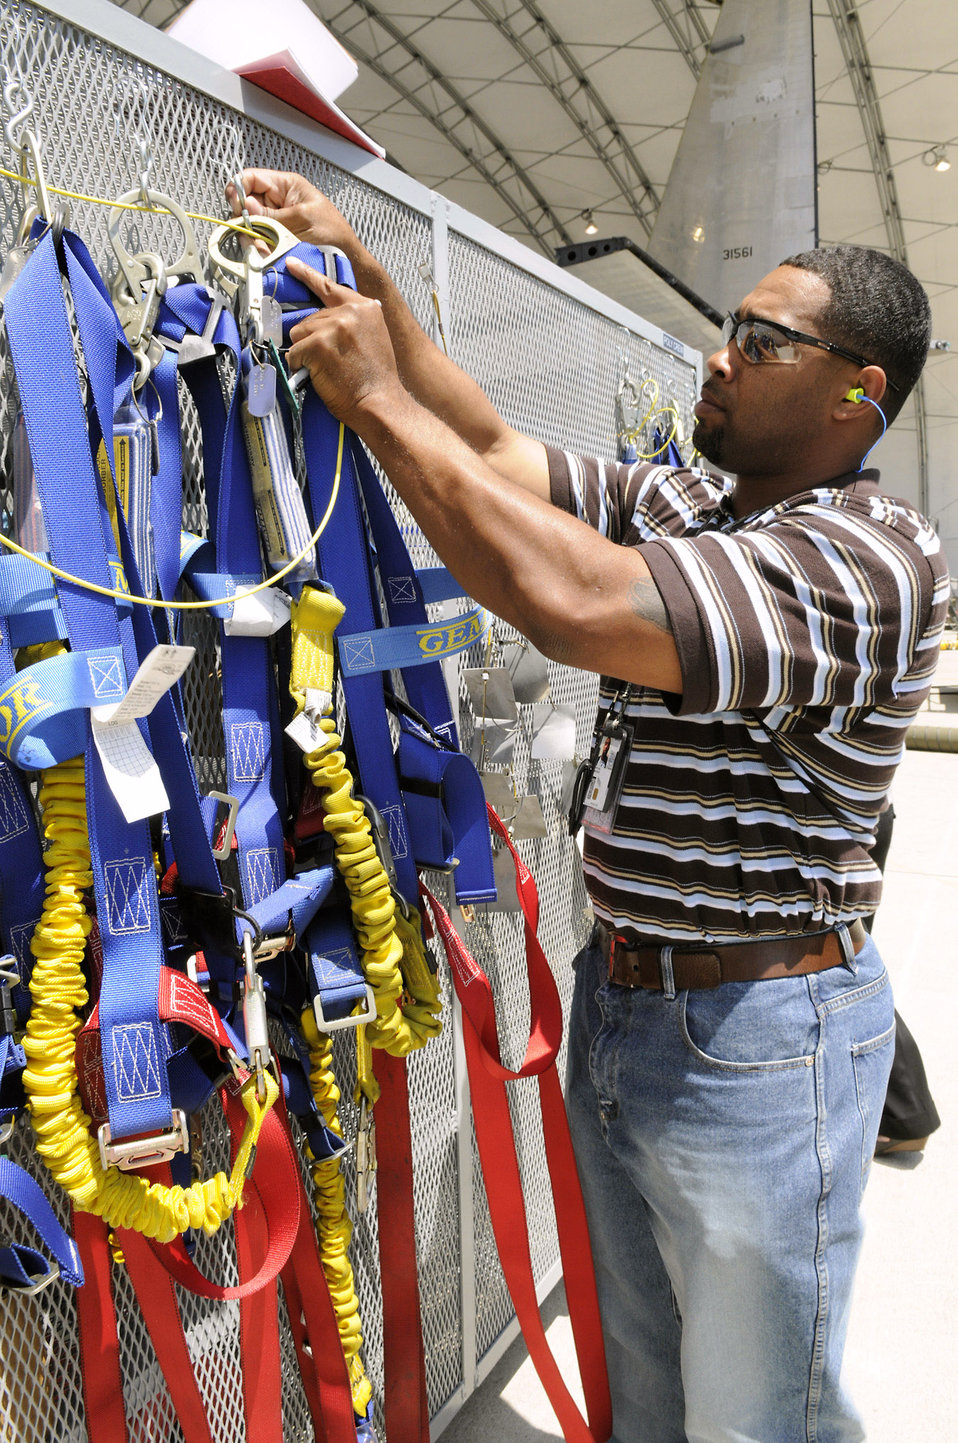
Robins implements philosophy to help maintainers

Maurice Appling hangs safety harnesses for aircraft mechanics use at Warner Robins Air Logistics Center, Ga. Mr. Appling manages a cart close to the aircraft with support equipment that is readily available to the mechanics, cutting down the time they must spend away from the aircraft. Mr. Applping is a supply technician.